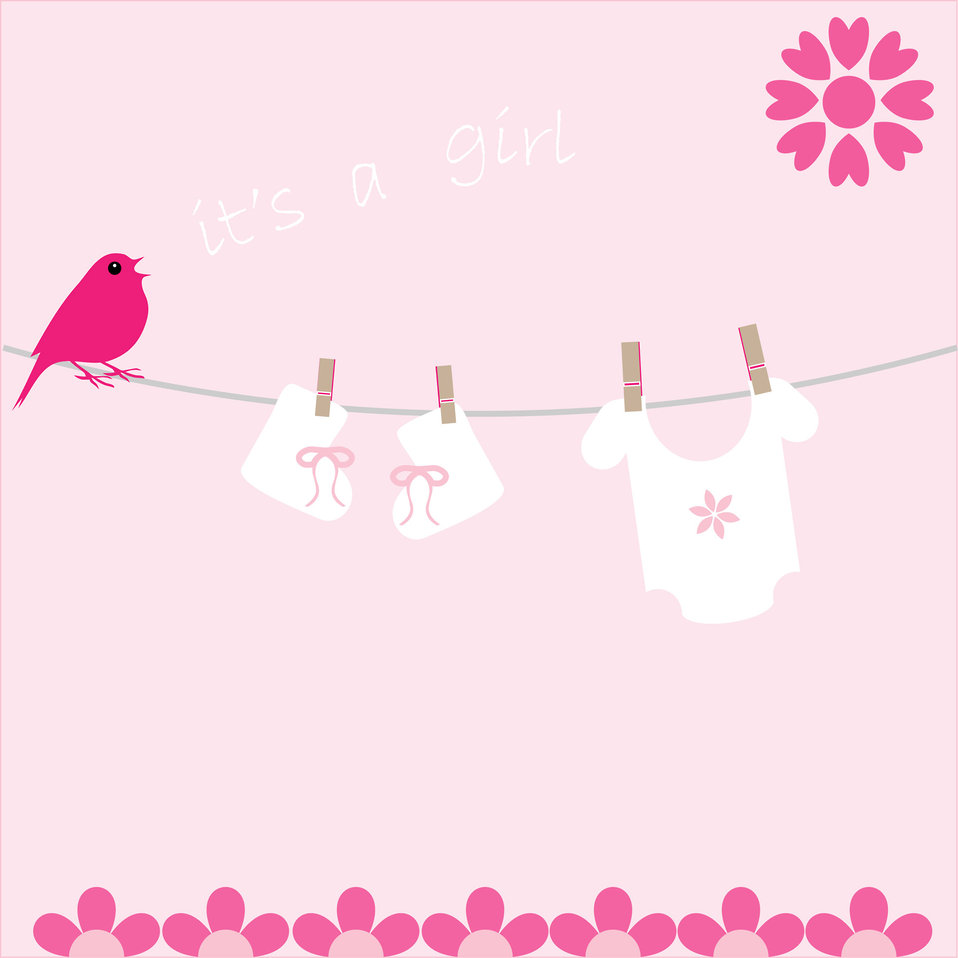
Baby girl card announcement

Its a girl cute bird and baby clothes on wahsing line card template for scrapbooking.